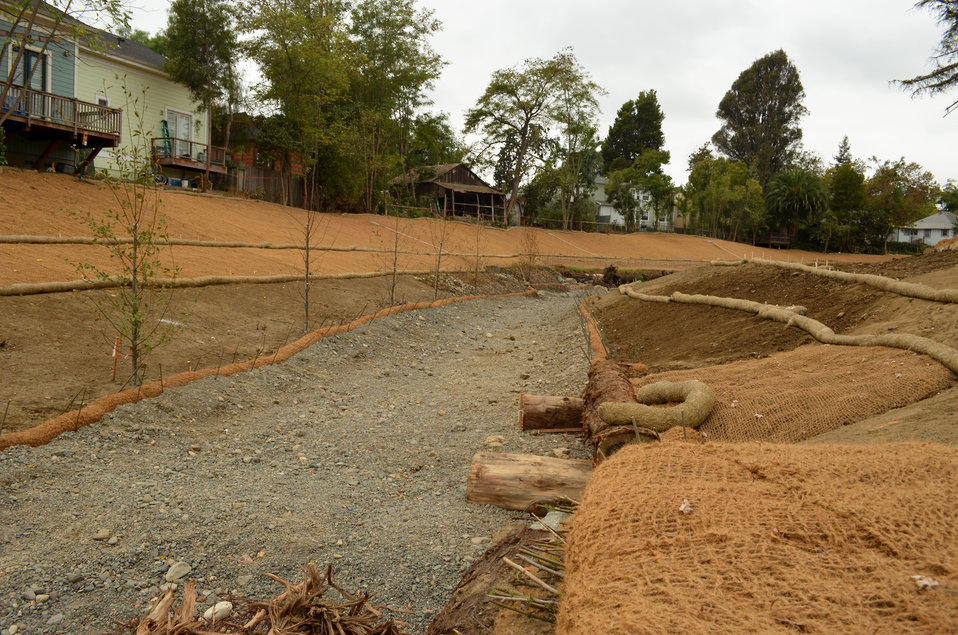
Napa Creek is 'storm ready'

An upstream look at Napa Creek habitat restoration work in Napa, Calif., Oct. 12, 2012. Tree trunks placed in the new, widened creek channel will provide habitat for fish and other aquatic life when the creek is full. The project – which also includes replacing a low bridge, widening the creek and installing underground water tunnels – offers flood water an easier path from the creek to Napa River, instead of overflowing and flooding nearby homes and businesses as it does on average every three to five years. A joint effort between the U.S. Army Corps of Engineers, the city of Napa and the Napa County Flood Control and Water Conservation District to reduce the city's flood risk, the $14.8 million Napa Creek project is funded by the American Recovery and Reinvestment Act of 2009.